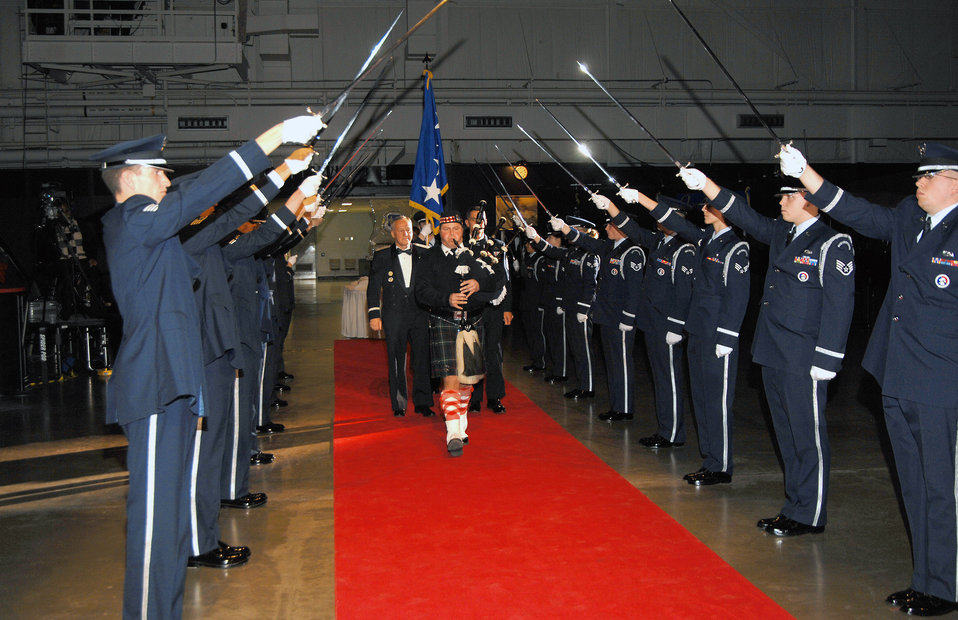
AFMC Airmen honor commander with Order of the Sword

A bagpiper escorts Gen. Bruce Carlson past the honor guard into the National Museum of the U.S. Air Force's modern flight gallery at the beginning of the Air Force Materiel Command Order of the Sword Ceremony Dec. 6 at Wright-Patterson Air Force Base, Ohio. General Carlson is the AFMC commander.